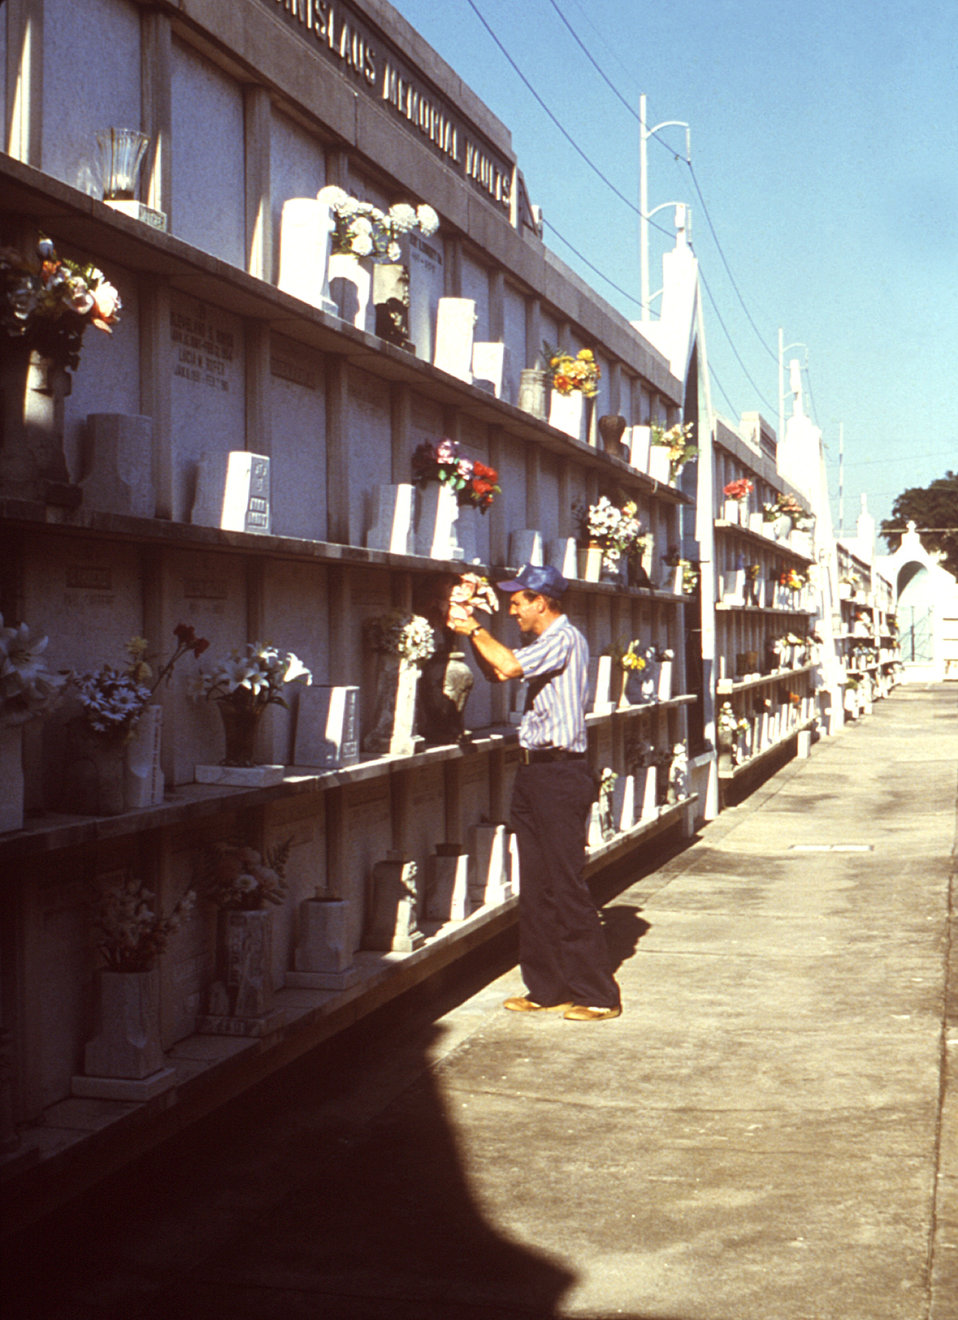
This 1979 photograph was taken inside St. Roch's Cemetery, New Orleans, LA., which acted as an urban-situated breeding site for Aedes aegypti, and Culex quinquefasciatus mosquitoes.